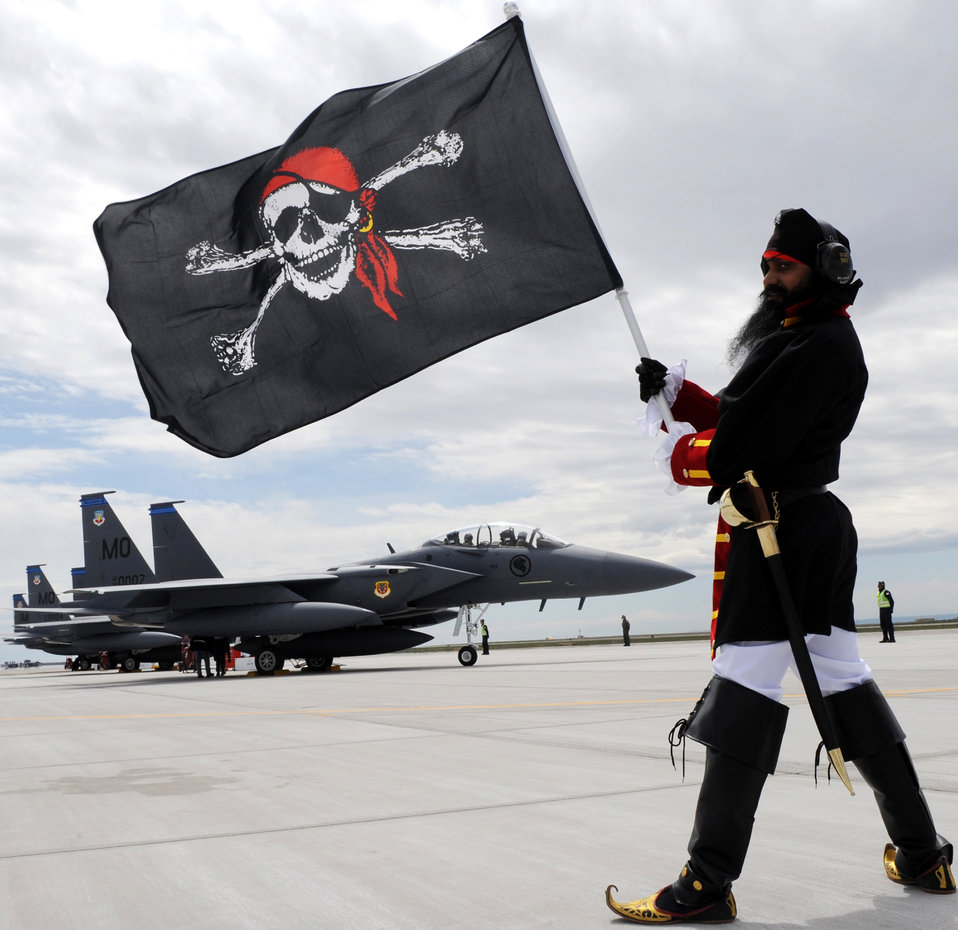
Ahoy mates, ready to rumble

The 428th Fighter Squadron